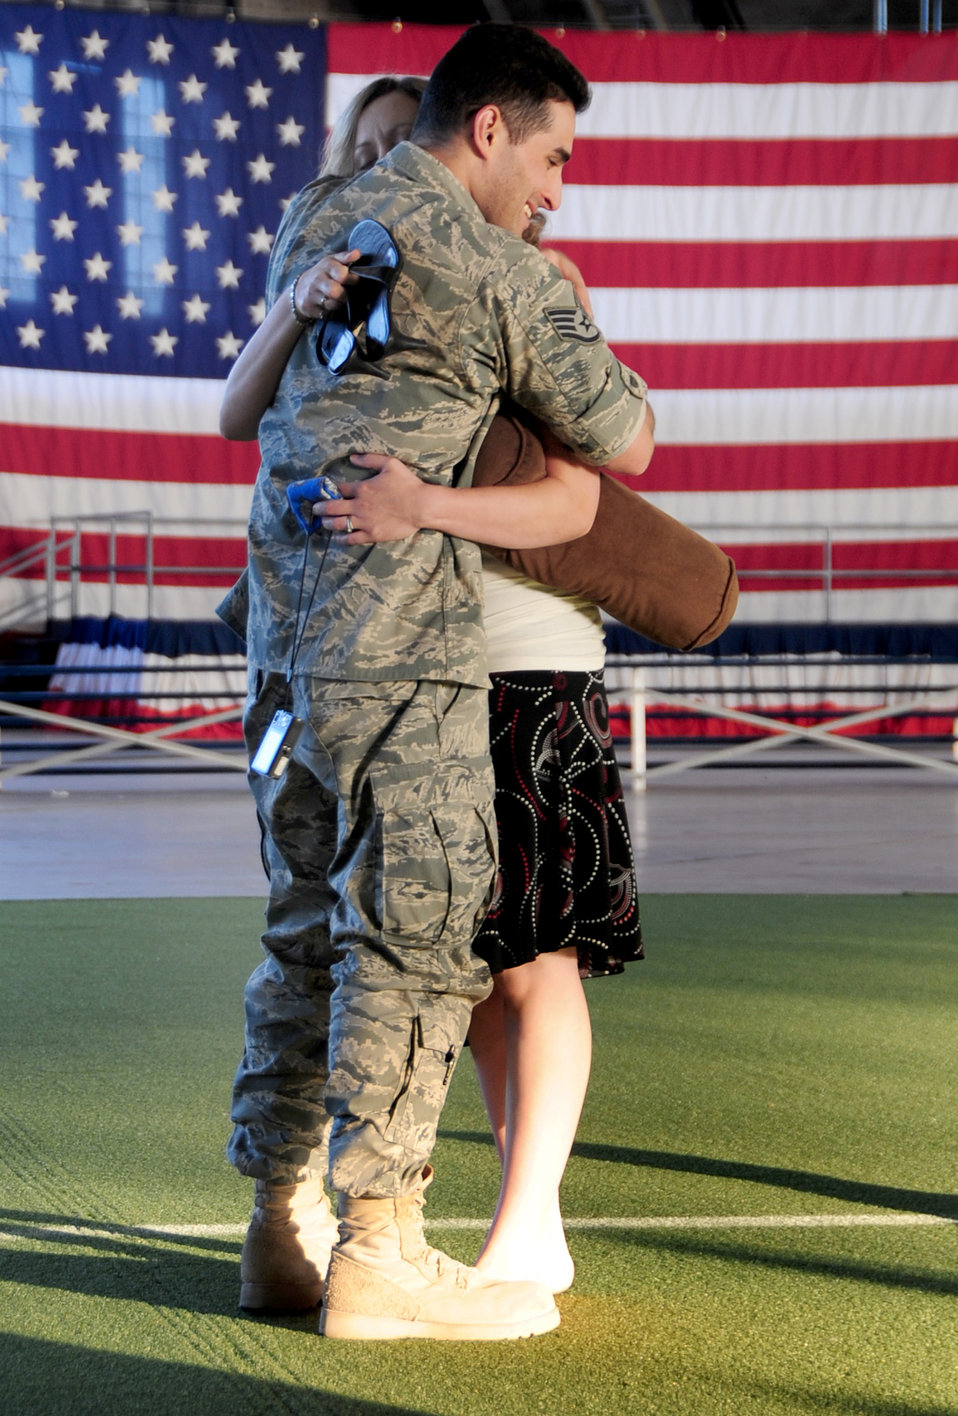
Talking it out -- getting through deployment

Staff Sgt. George Munoz hugs his wife, Christan, July 28, 2010, at Ellsworth Air Force Base, S.D., after returning from a deployment. Sergeant Munoz is an armament maintainer assigned to the 28th Munitions Squadron.